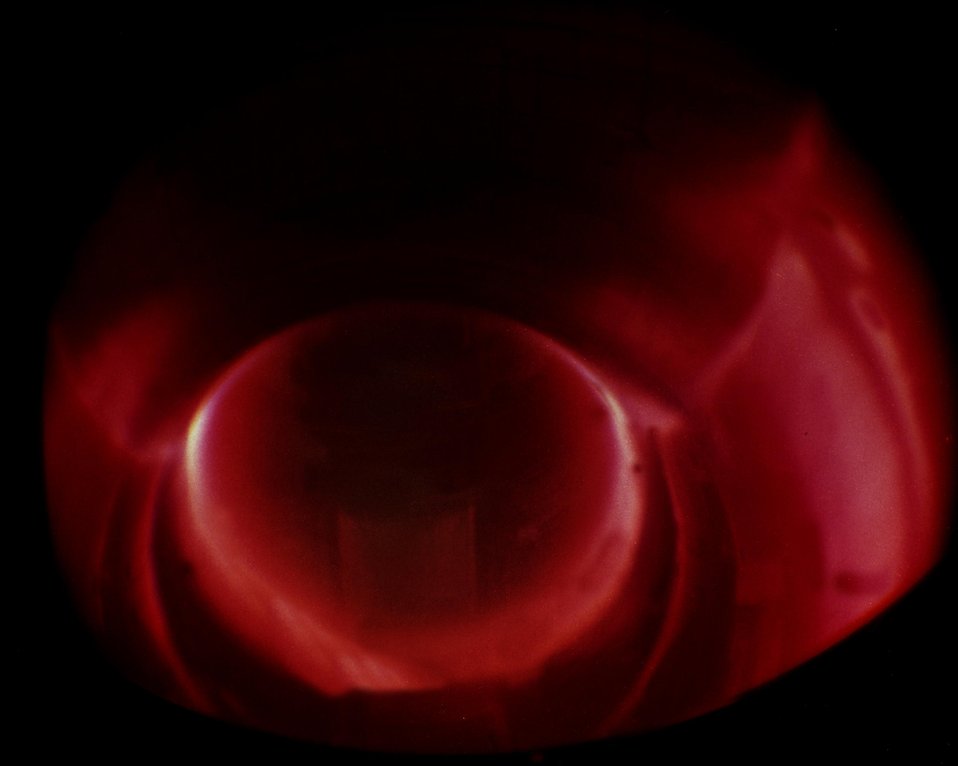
VIEW OF AN OHMICALLY - HEATED DEUTERIUM PLASMA DURING TFTR OPERATION.

DURING TFTR OPERATION, PLASMA DISCHARGE IS MONITORED USING AN OPTICAL SYSTEM WHICH VIEWS THE INTERIOR OF THE VACUUM VESSEL. IN THE VIEW OF AN OHMICALLY-HEATED DEUTERIUM PLASMA, AN ICRF ANTENNA & A SEGMENT OF AN OUTBOARD LIMITER ARE VISIBLE IN LEFT-SIDE BACKGROUND. BRIGHT RADIATION BELT IN FOREGROUND WHICH ENCIRCLES THE TORIODAL BUMPER LIMITER IS KNOWN AS A MARFE. IT OCCURS AS PLASMA DENSITY APPROACHES THE DISRUPTION LIMIT FOR A GIVEN SET OF DISCHARGE CONDITIONS.